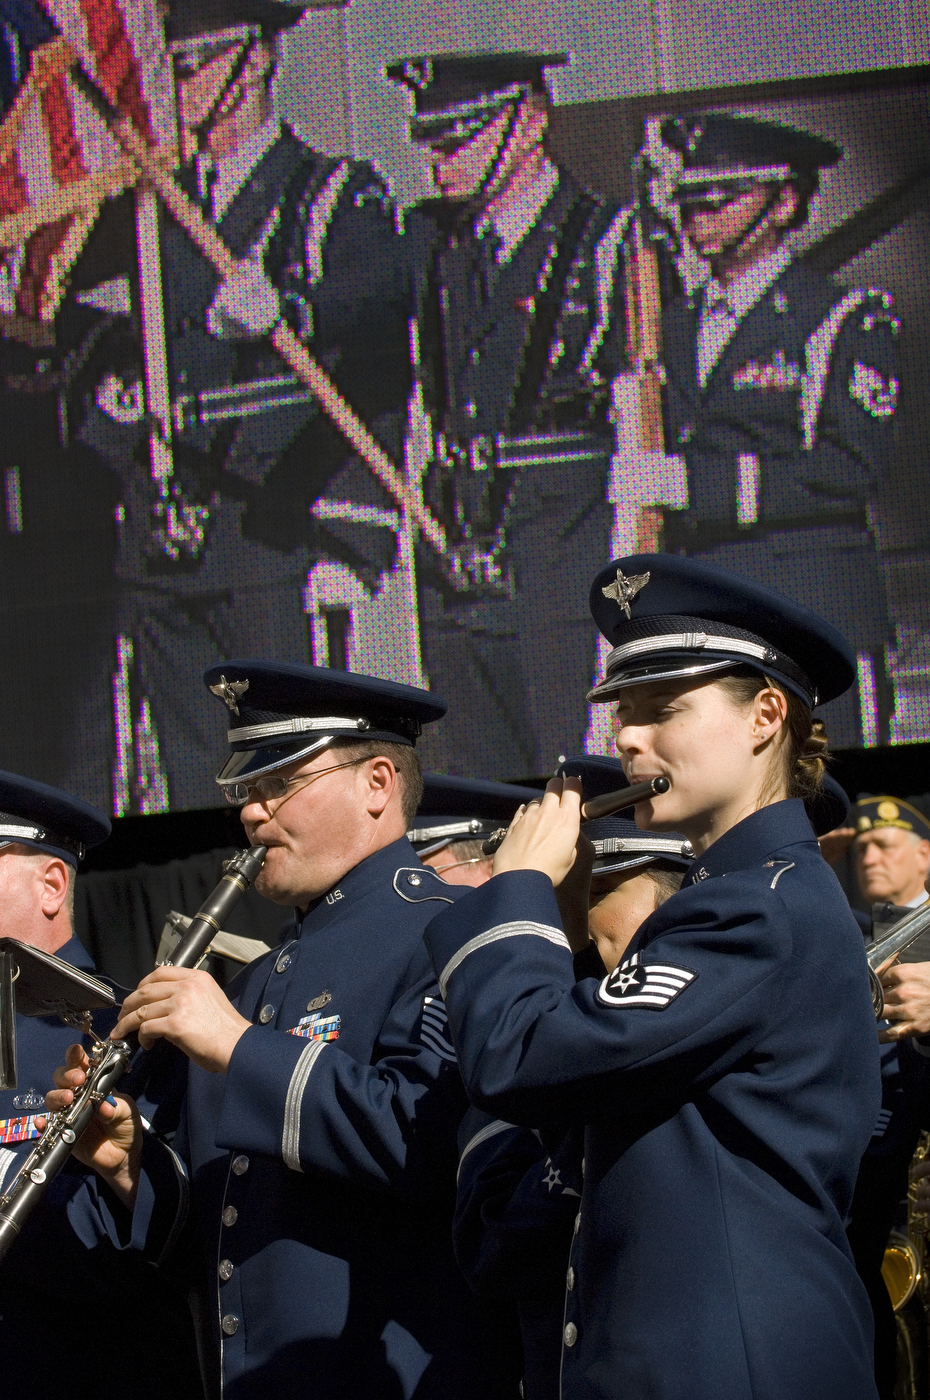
Air Force Week kicks off in Los Angeles

The Air Force Band of the Golden West performs Nov. 14 at Hollywood and Highland Plaza in Los Angeles for the opening ceremonies for Air Force Week-Los Angeles. Air Force Week-Los Angeles is Nov. 14 to 21 and has events throughout the area.